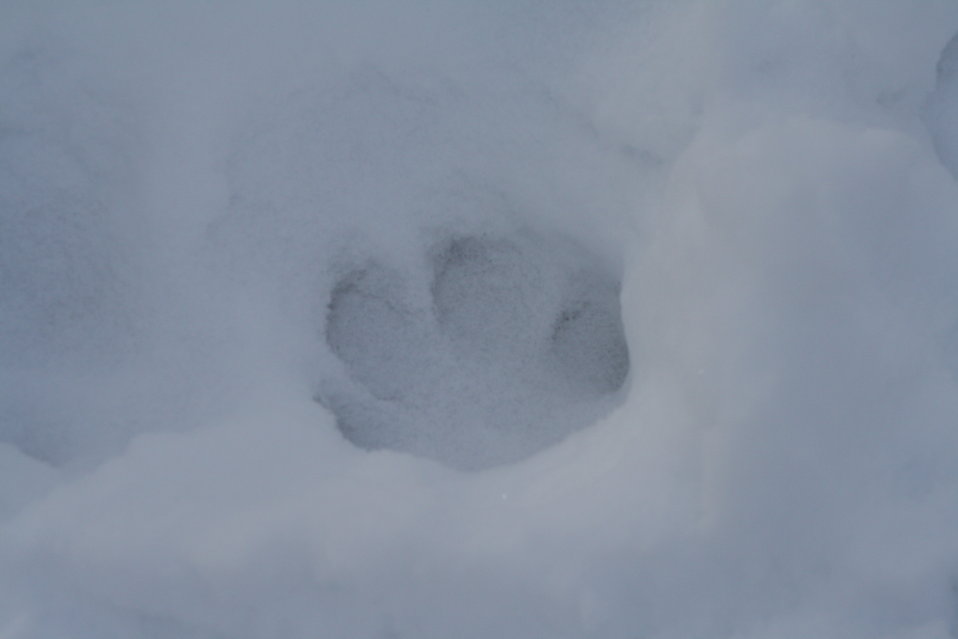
Bobcat Track in Snow

Bobcat track at at Lee Metcalf National Wildlife Refuge. Note the rounded appearance, toe spread, lack of claw imprint...identifies this as a bobcat print. Count yourself lucky if you actually see one of these animals...they're secretive.